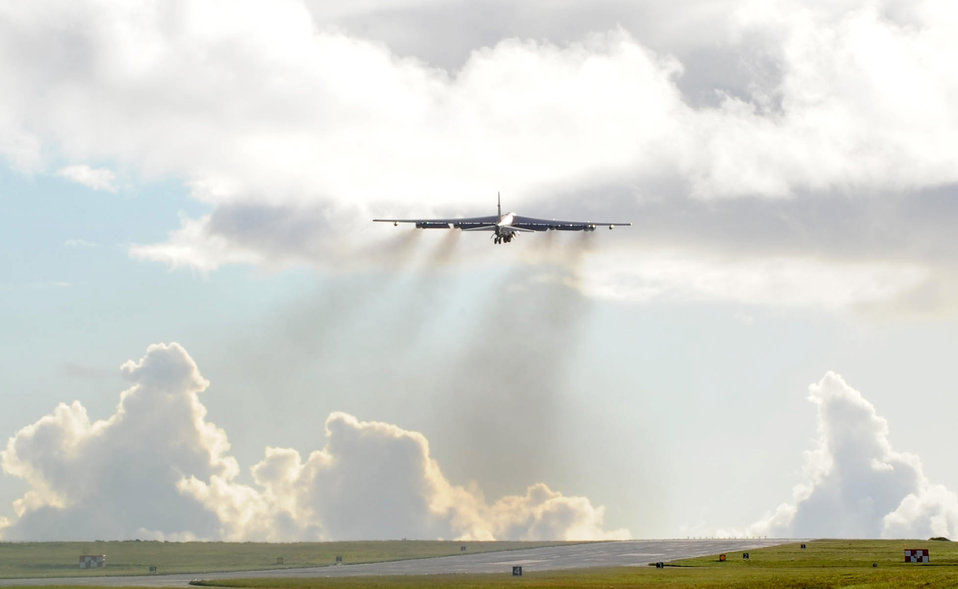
Bombers fly down under

A B-52 Stratofortress from the 96th Expeditionary Bomb Squadron takes off July 24 from Andersen Air Force Base, Guam. The B-52s completed 10 sorties flying more than 110 hours while participating in Talisman Saber 2009, a joint and coalition exercise that ran July 15 through 24. The B-52s are deployed from Barksdale AFB, La., to support U.S. Pacific Command's continuous bomber presence in the Asia-Pacific region.